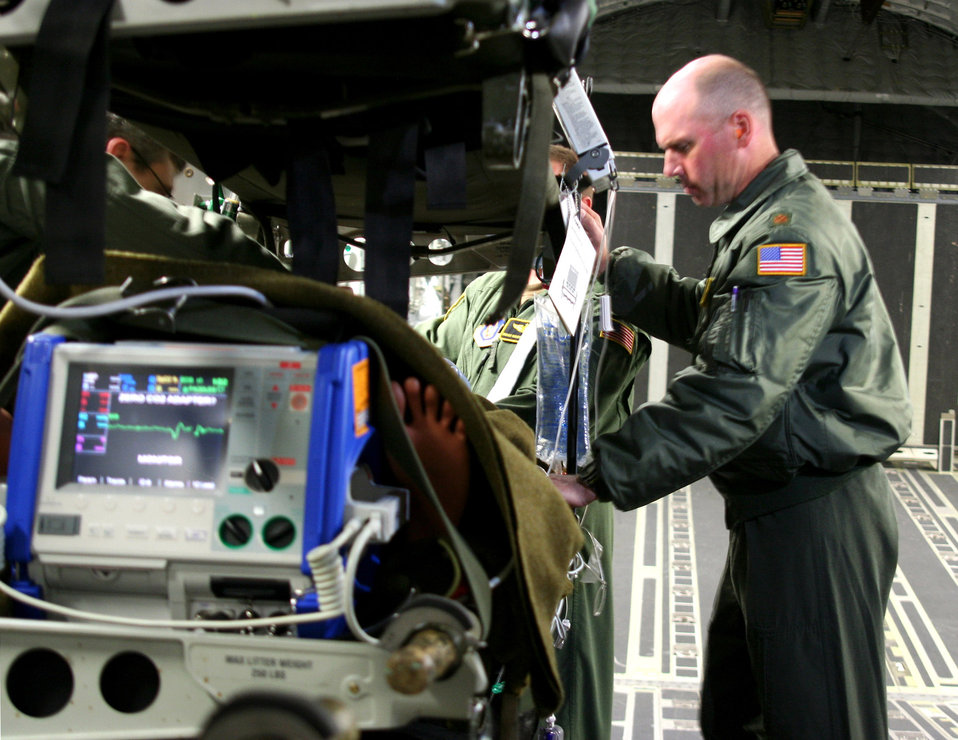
Air Force air evac crews adapt, train onboard mix of planes

Maj. (Dr.) Joseph Lawlor monitors a simulated patient onboard a C-17 Globemaster III. Five squadrons and about 80 medical personnel from California, Florida, Maryland and Georgia participated in the Air Force Reserve Aeromedical Evacuation Jamboree held April 28 and 29 at Wright-Patterson Air Force Base, Ohio. Major Lawlor is a flight surgeon with the 445th Aeromedical Staging Squadron, and is assigned to a Critical Care Air Transport Team or CCATT that closely monitors seriously ill or wounded patients.